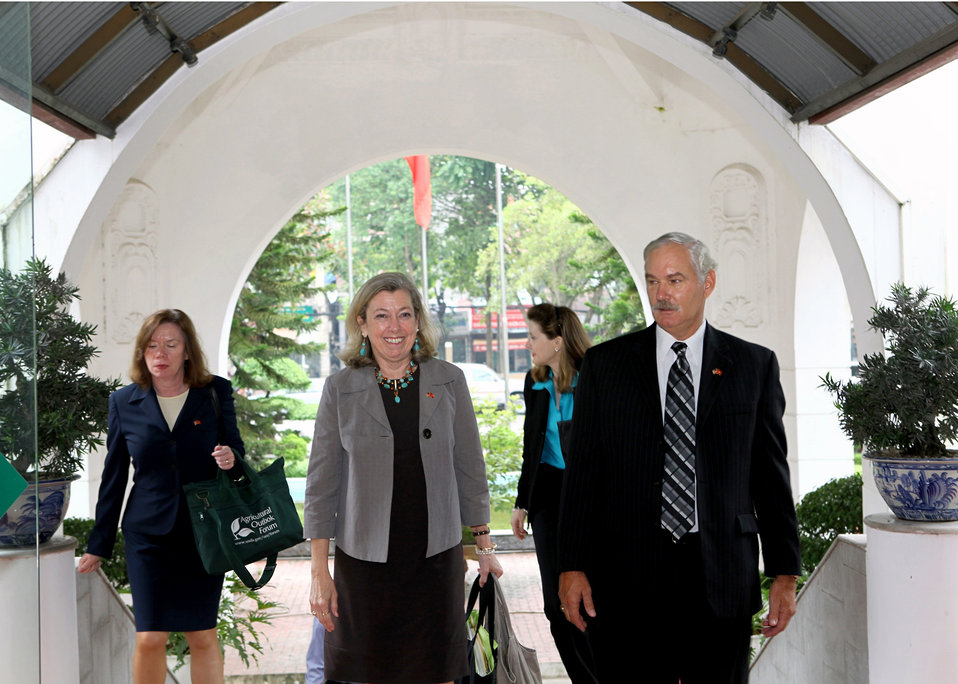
The Foreign Agricultural Service’s Acting Administrator Sue Heinen (grey jacket) and Acting Under Secretary for Farm and Foreign Agricultural Services Michael Scuse walk into Vietnam’s Ministry of Agriculture and Rural Development while in Hanoi on September 25, 2011 as part of USDA’s first agricultural trade mission to Vietnam.